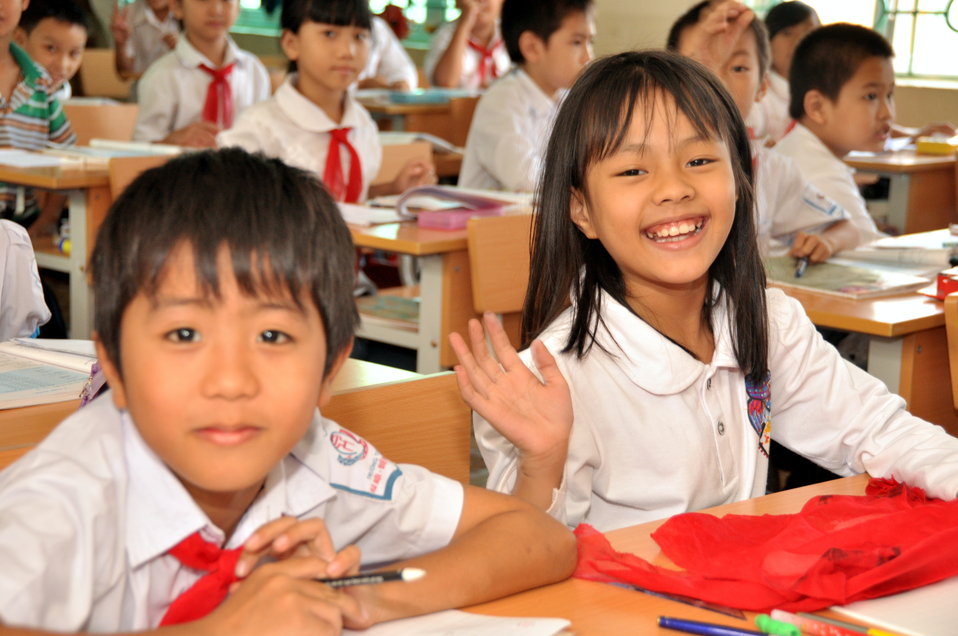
School children receive a dose of deworming medicine in Dien Bien

October 31, 2012